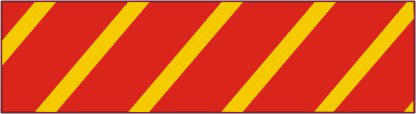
Air Force releases combat action medal criteria

Air Force combat action medal ribbon.